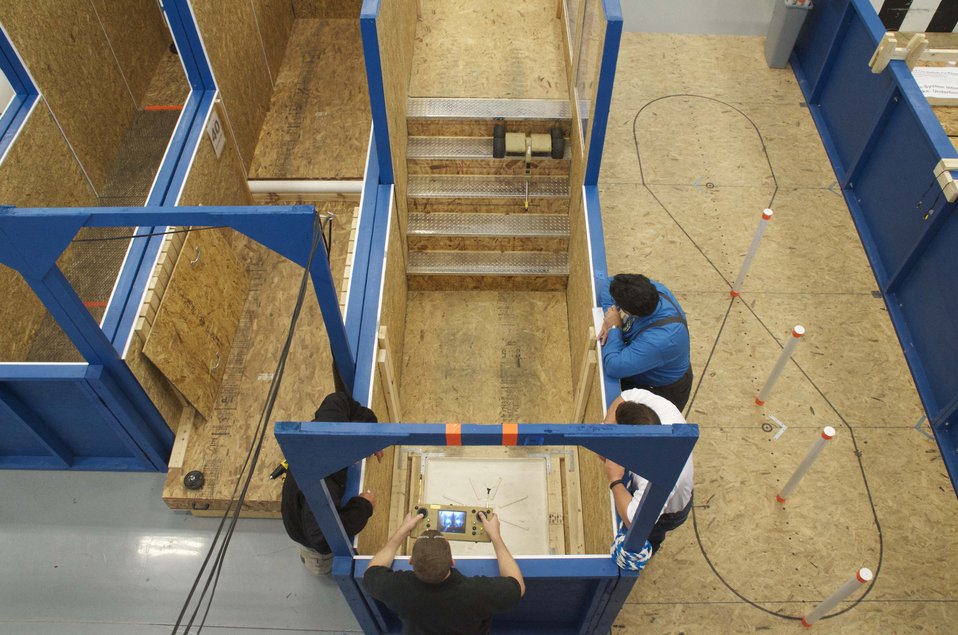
Robot Stair Climb Station

A Montgomery County Bomb Squad member maneuvers a small robot up the stair challenge using remote controls.

Development of test methods at the NIST Robot Test Facility is funded in part by the NIST Office of Law Enforcement Standard's Counterterrorism and Response Technologies program.